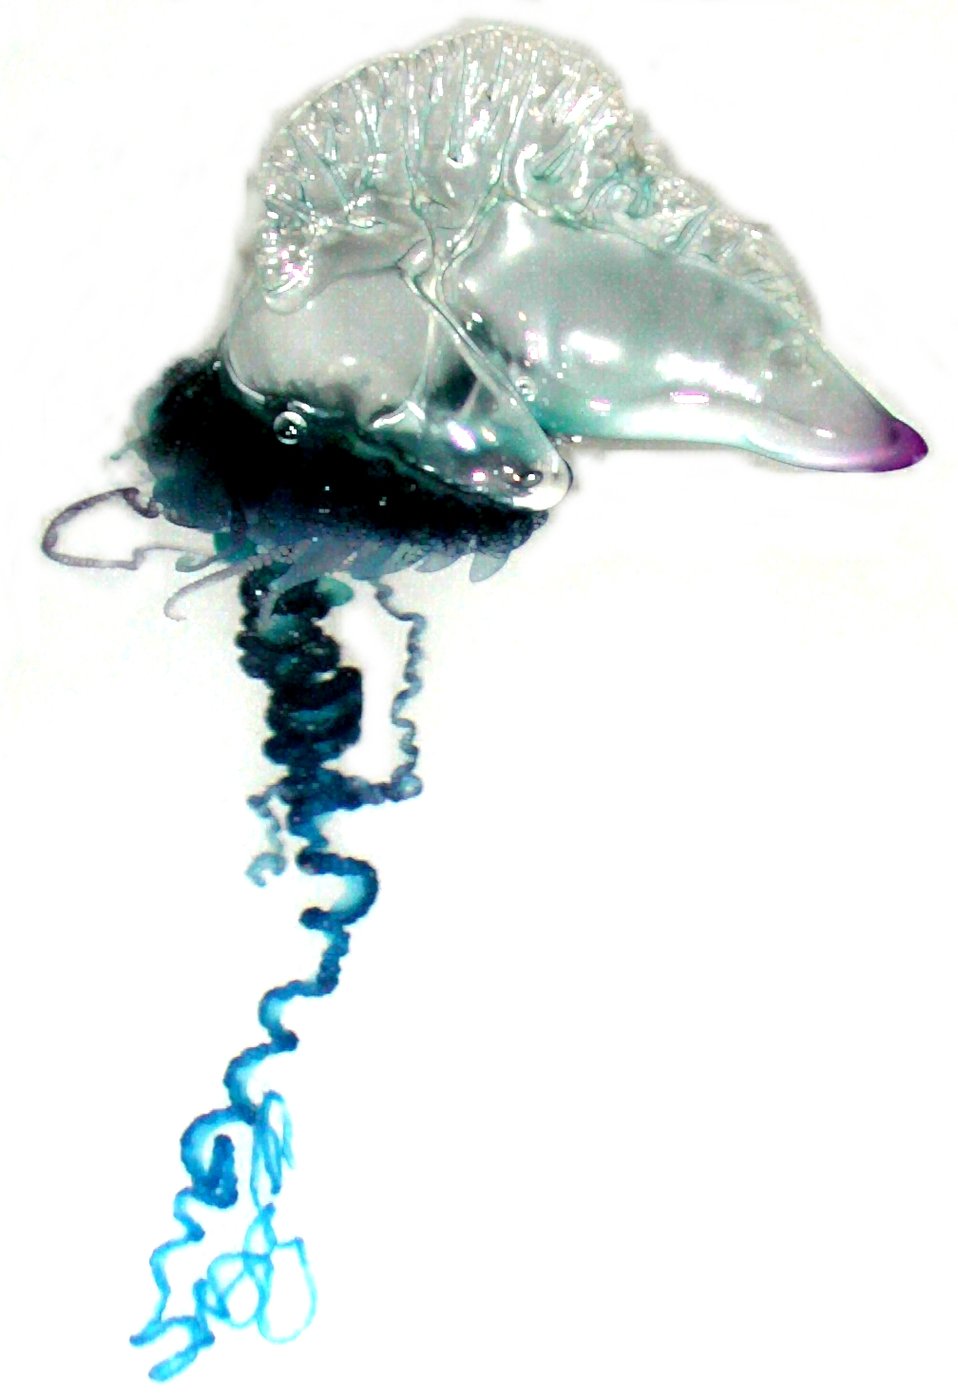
This tiny and very dangerous Portugese Man-O-War jellyfish measures only an inch across. It was collected using a dip net over the rail of the R/V Seward Johnson during one evenings 'night-lighting' samplings.